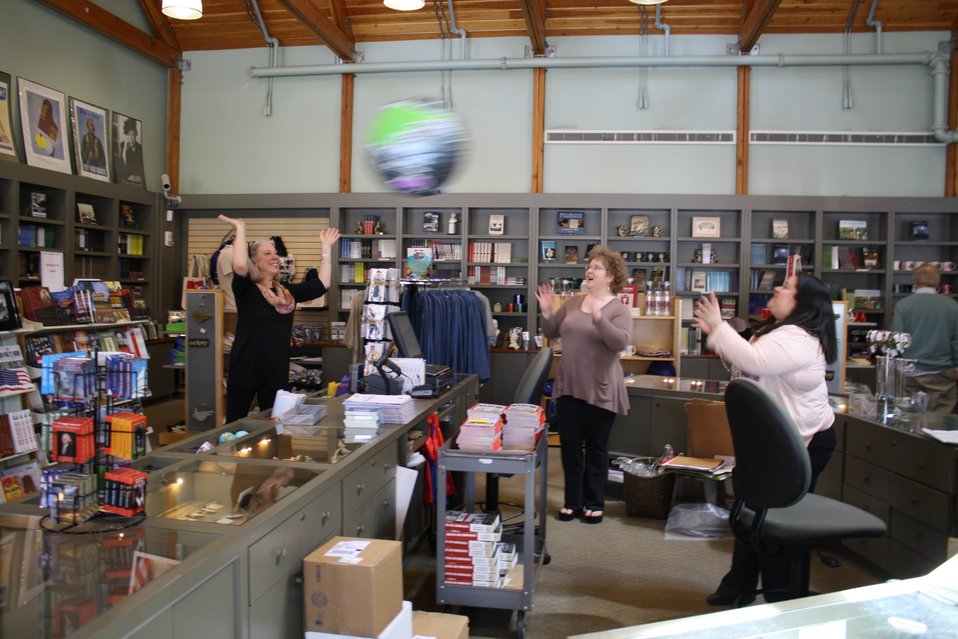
LP-FDR New Deal Store staff Amy Northup, LeslieAynn Miller, and Yvette DeGracia do some new product testing on a world globe beach ball.; Location: Franklin D. Roosevelt Presidential Library Store, Hyde Park, New York